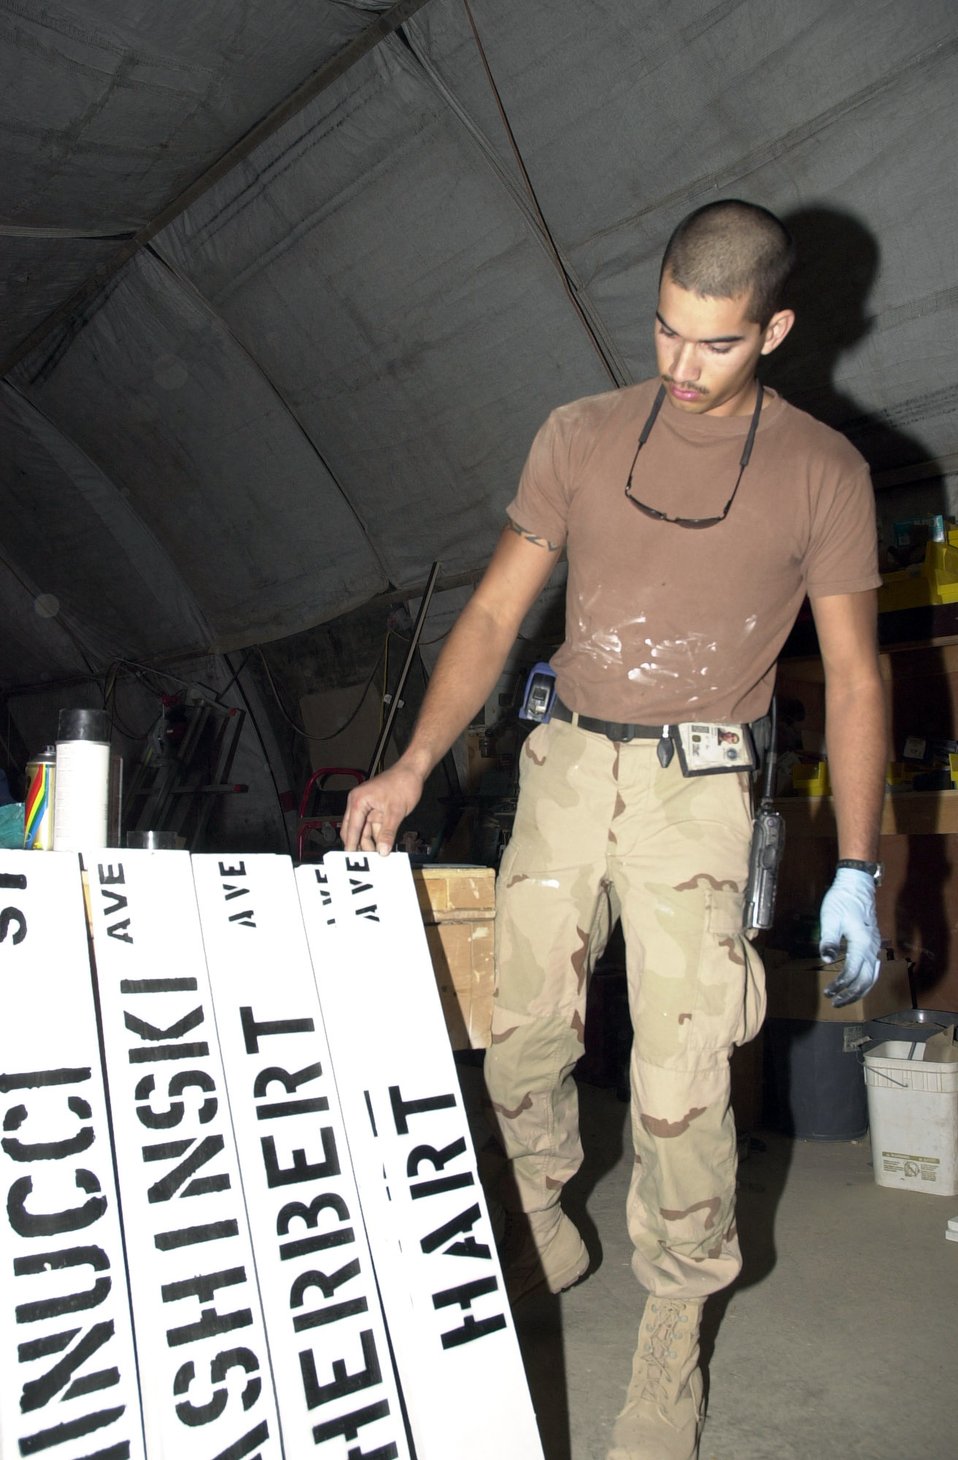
The making of a memorial

KIRKUK AIR BASE, Iraq (AFPN) -- Senior Airman Joey Nachez studies a few of the completed street signs that bear the names of Soldiers killed in action while serving with the 173rd Airborne Division in northern Iraq in 2003. Airman Nachez is a structural journeyman assigned to the 506th Air Expeditionary Group and deployed from Pease Air Force Base, N.H.